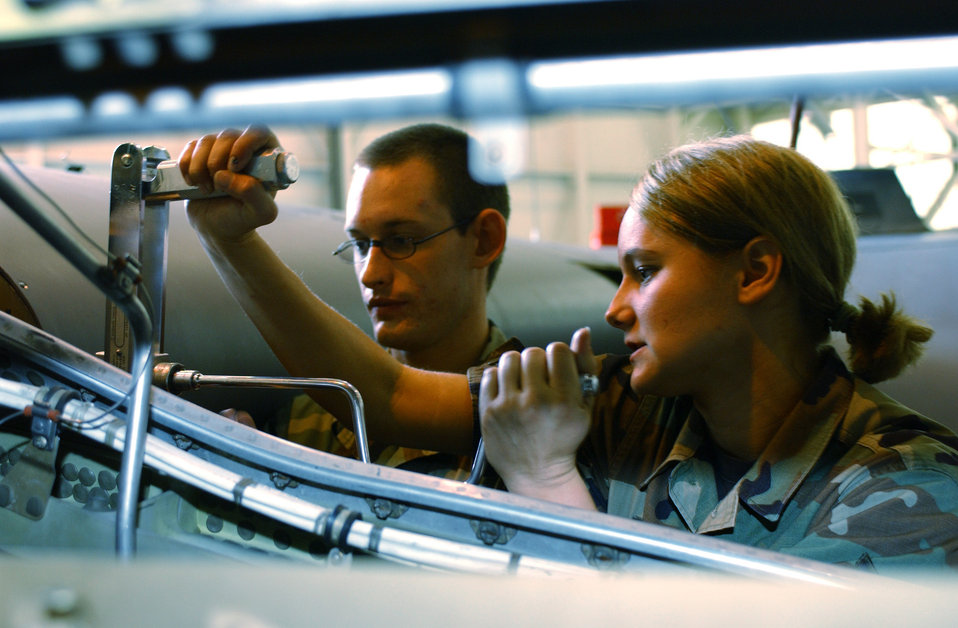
Easy maintenance

CHARLOTTE, N.C. -- Senior Airmen Ryan Poprawski (left) and Gizel Hartel open a panel on a C-130 Hercules here Oct. 3. Both Airmen are crew chiefs assigned to the North Carolina Air National Guard's 145th Airlift Wing.